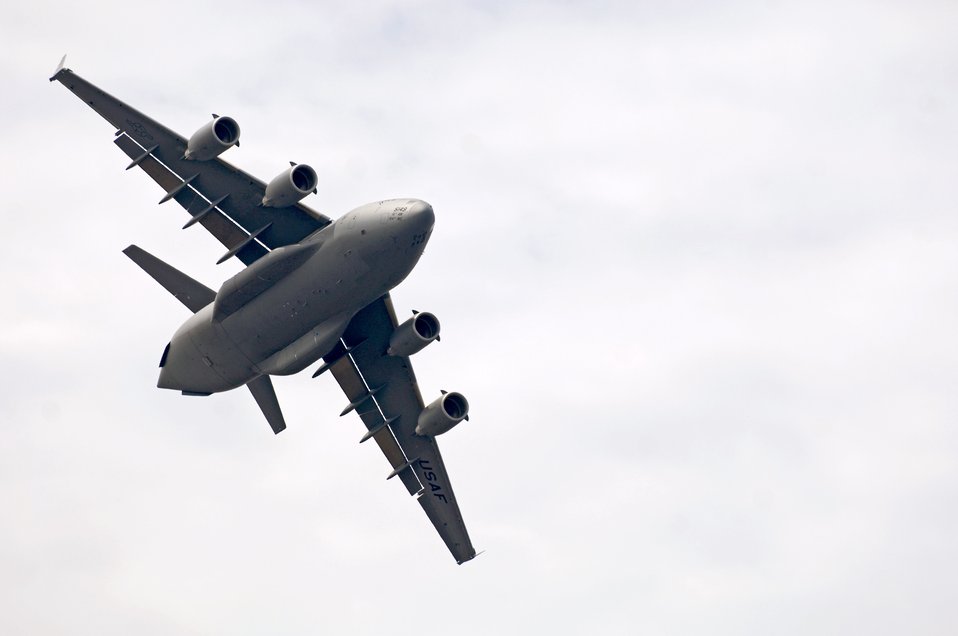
Air show to showcase C-17's capabilities

A C-17 Globemaster III practices aerial maneuvers Sept. 27 over Kona International Airport in Hawaii to prepare for an upcoming air show. The C-17 is from the 535th Airlift Squadron based at Hickam Air Force Base, Hawaii.